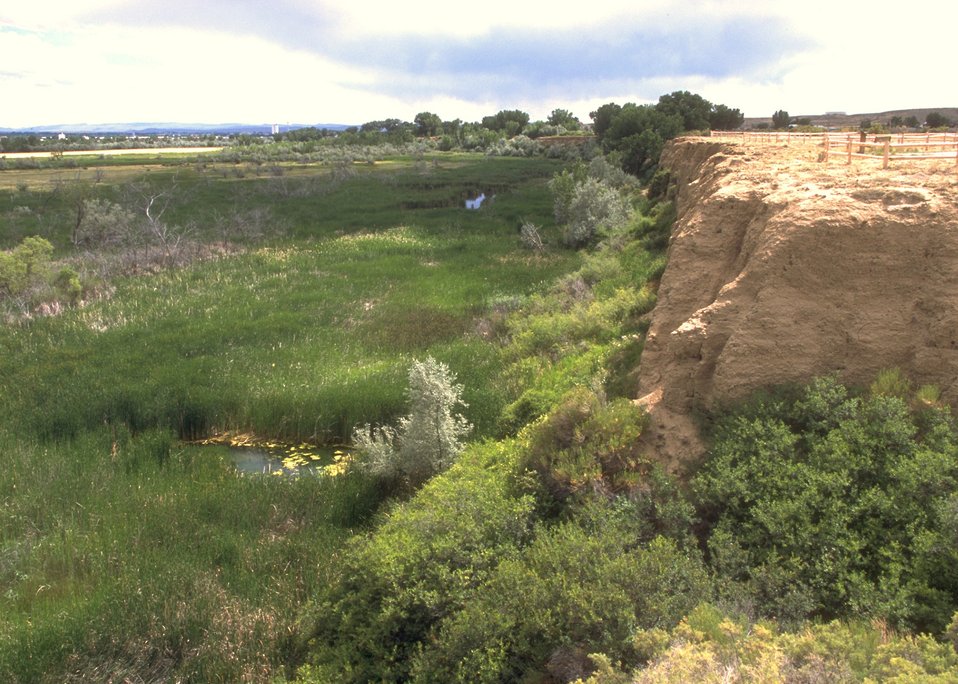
Duck Swamp Interpretive Area, Worland Field Office.